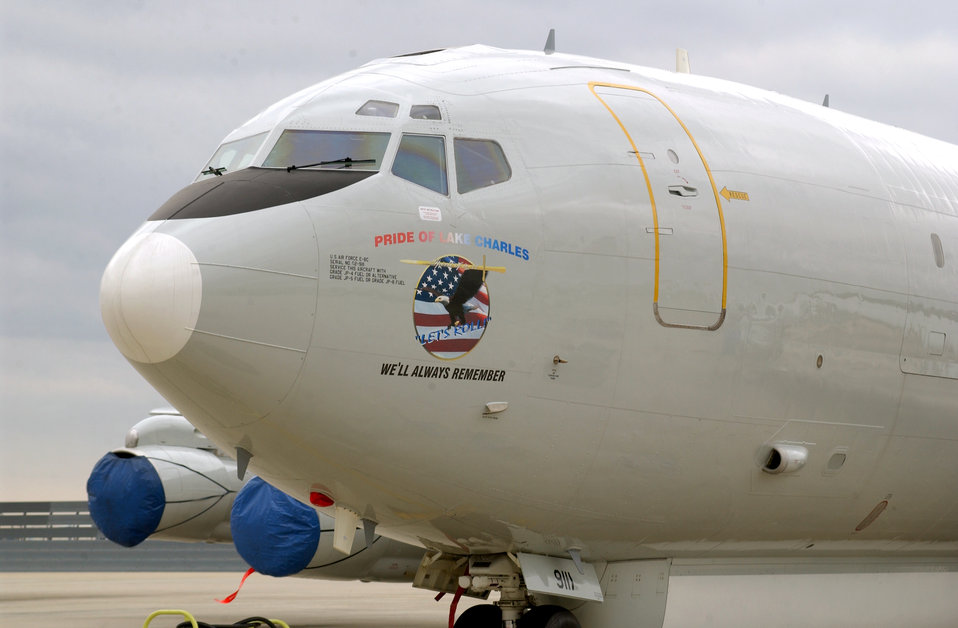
Final Joint STARS aircraft delivered

ROBINS AIR FORCE BASE, Ga. -- Officials of the 116th Air Control Wing here received the 17th and final E-8C Joint Surveillance Target Attack Radar System aircraft March 23. The wing is the only unit to fly the aircraft. The Joint STARS aircraft is the world's most advanced wide-area airborne ground surveillance, targeting and battle management system.